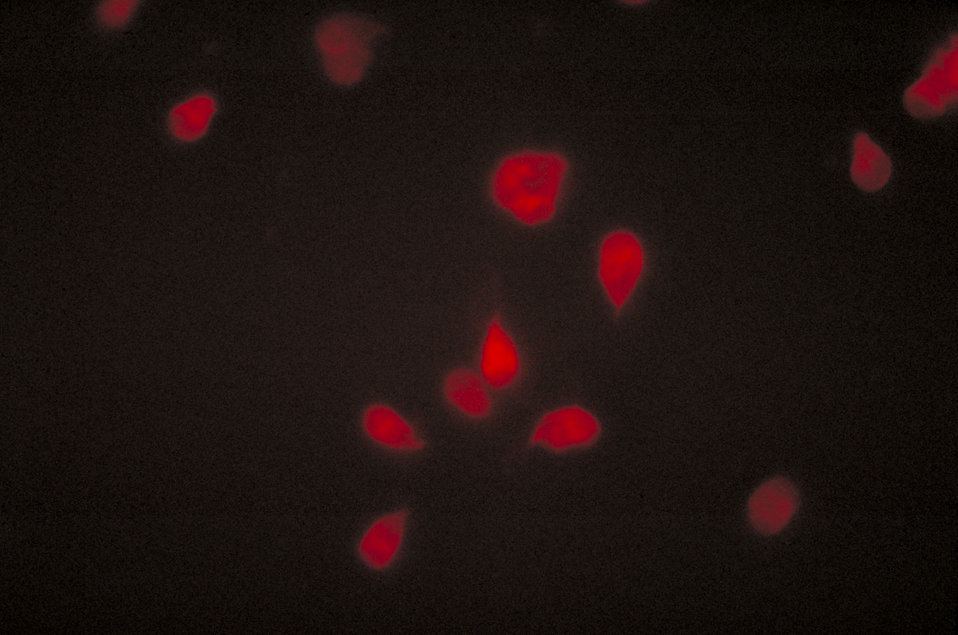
This photomicrograph depicts a negative indirect fluorescent antibody (IFA) test for Giardia lamblia parasites.